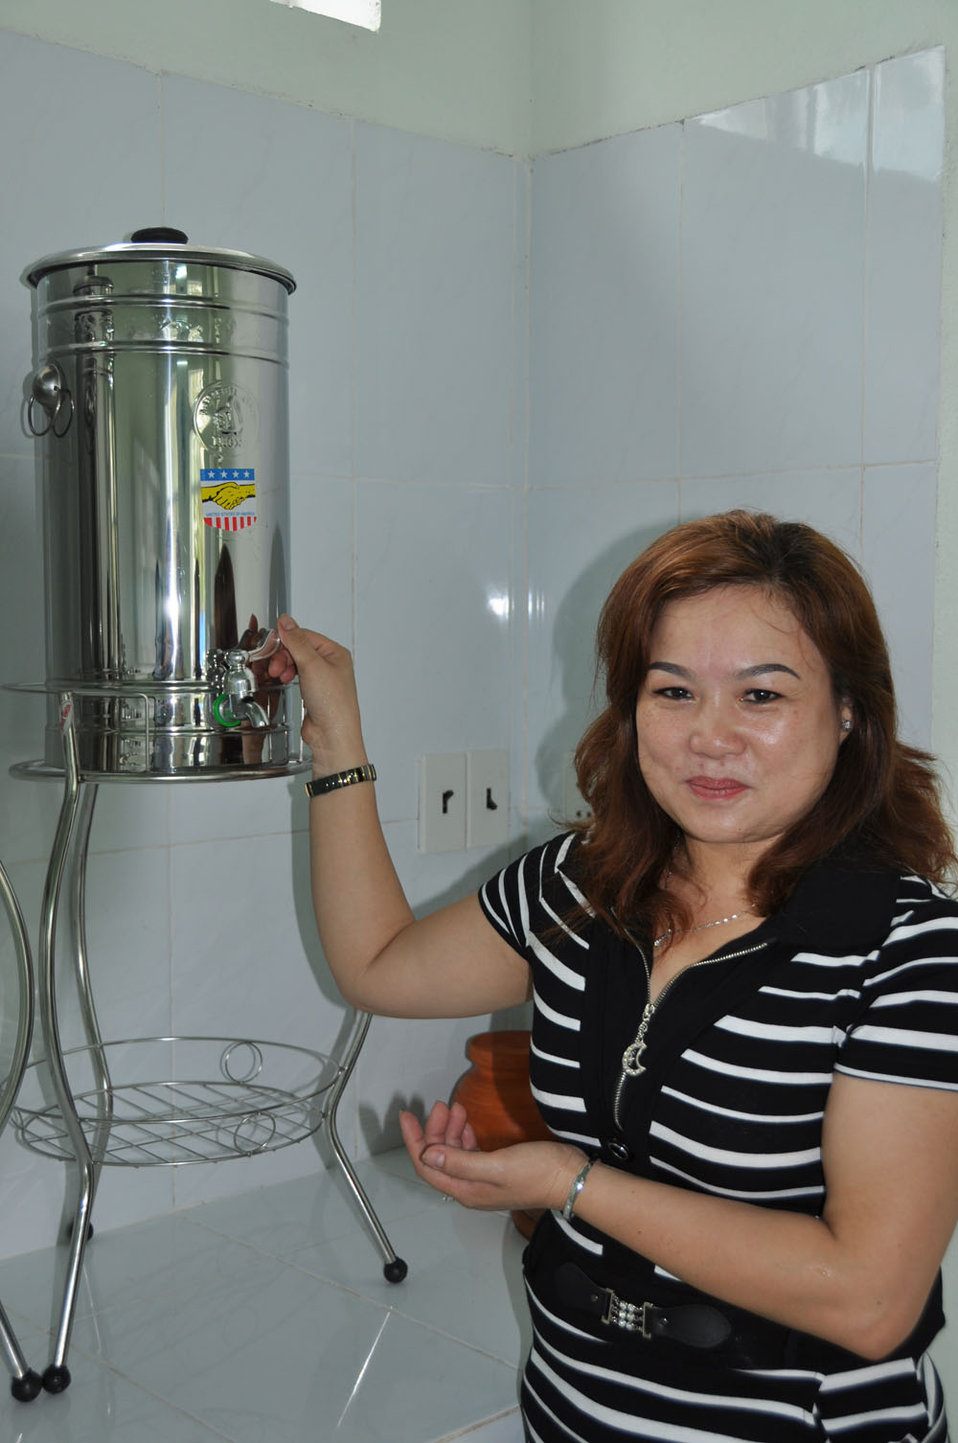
A kindergarten receives a new kitchen, funded by USAID.